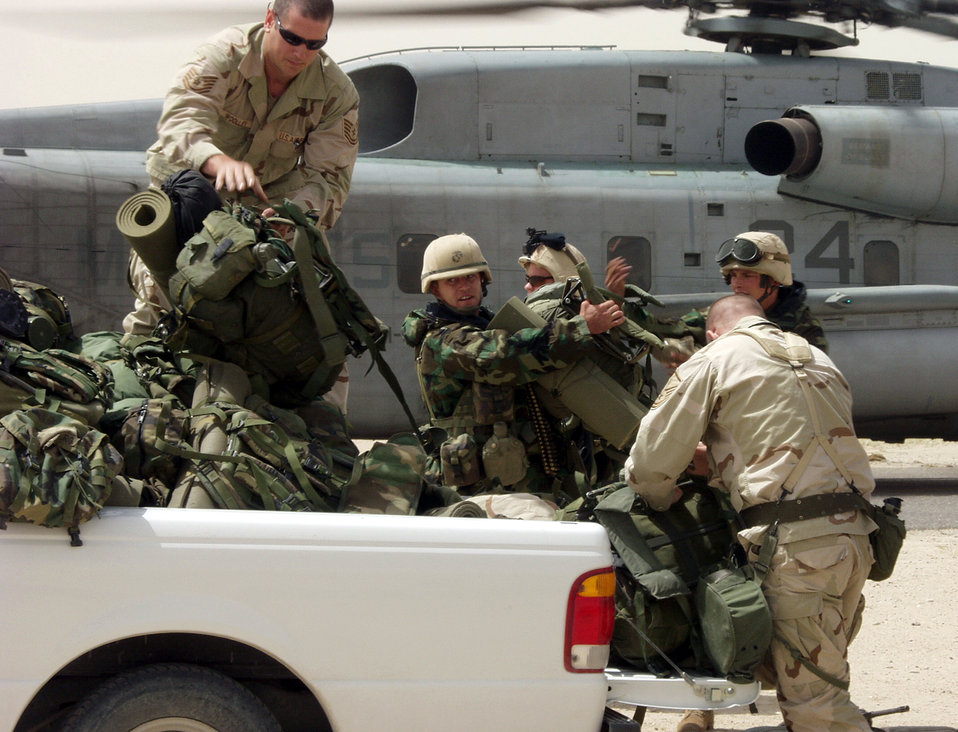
Helping the Corps

OPERATION IRAQI FREEDOM - Tech. Sgt. Mark Woolley and Master Sgt. Jim Norton, both air traffic controllers with the 386th Air Expeditionary Wing, help load bags belonging to Marines moving north to Iraq. Operation Iraqi Freedom is the multinational coalition effort to liberate the Iraqi people, eliminate Iraq’s weapons of mass destruction and end the regime of Saddam Hussein.